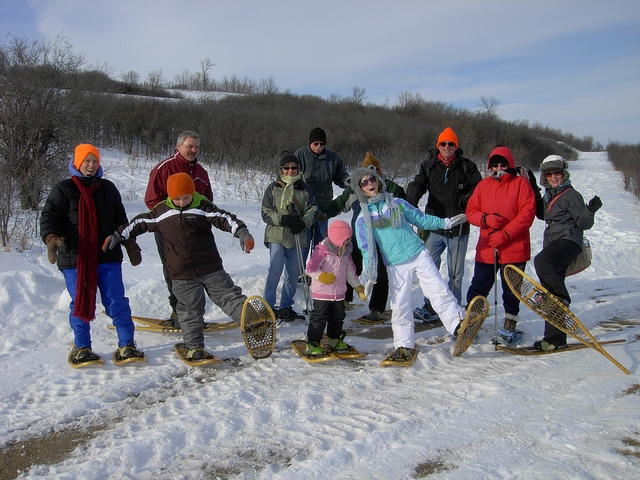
Snowshoers

A group of snowshoers at Des Lacs Refuge in January 2011.